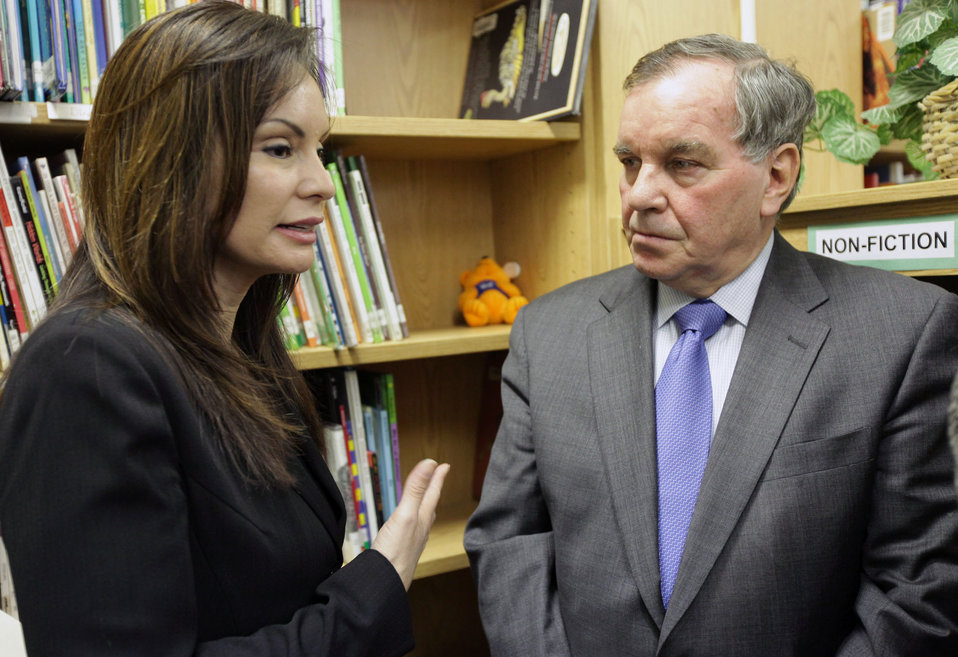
Rios in Chicago: 1/6/10

Treasurer of the United States Rosie Rios and Chicago Mayor Richard Daley in Chicago on January 6, 2010.